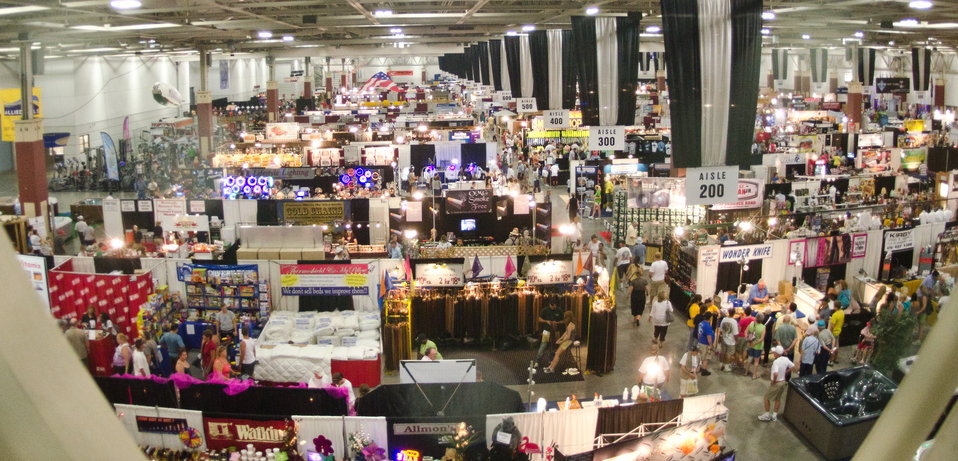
Exhibition Hall at the Wisconsin State Fair in West Allis, WI, on Thursday, August 4, 2011, USDA Photo by Lance Cheung.